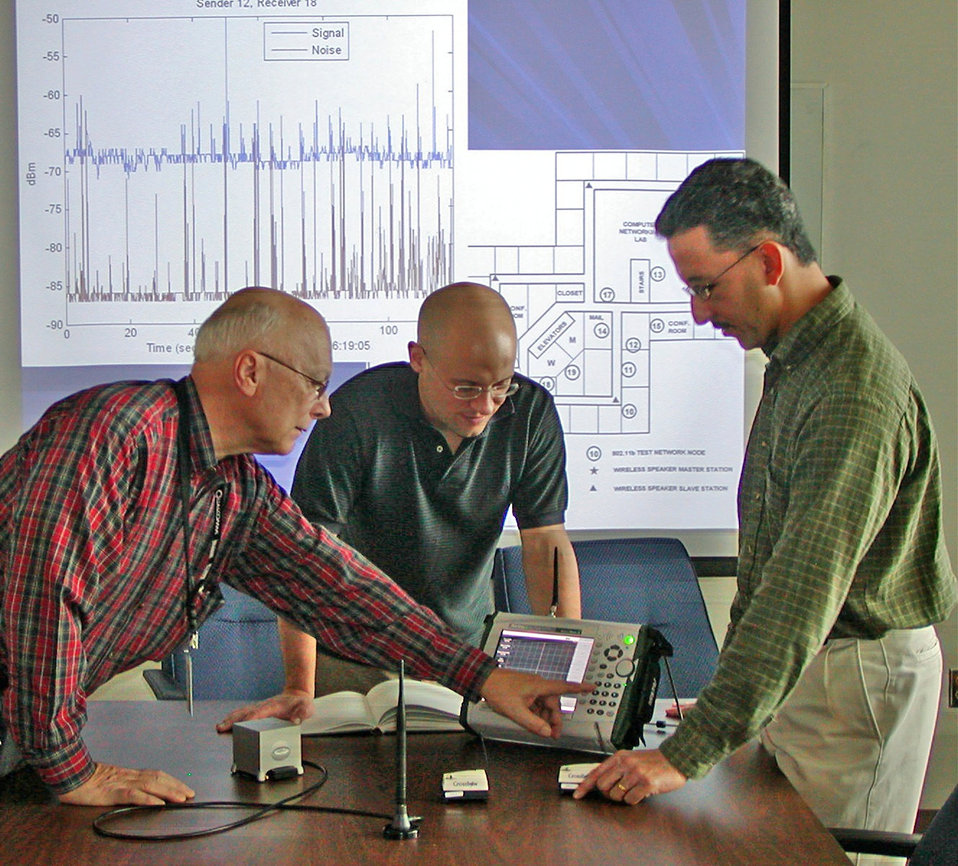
Measuring Radio Environment

Len Miller (from left), Luke Klein-Berndt, and Michael Souryal from ITL measure the radio environment in NIST North as part of a project to develop better radios for first responders. (September 2005)